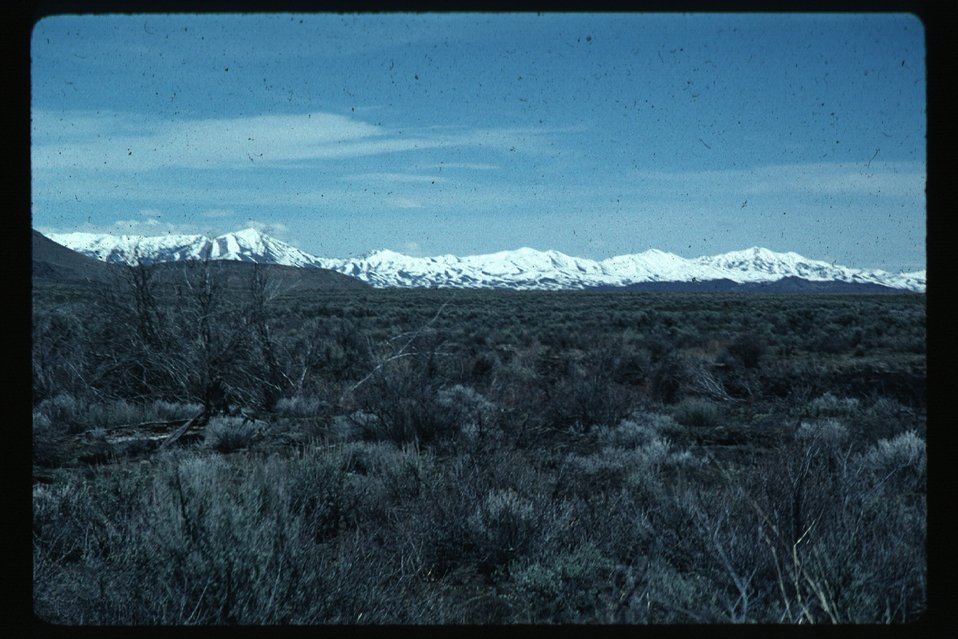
Rangeland Four Rivers Field Office LSRD Lower Snake River District